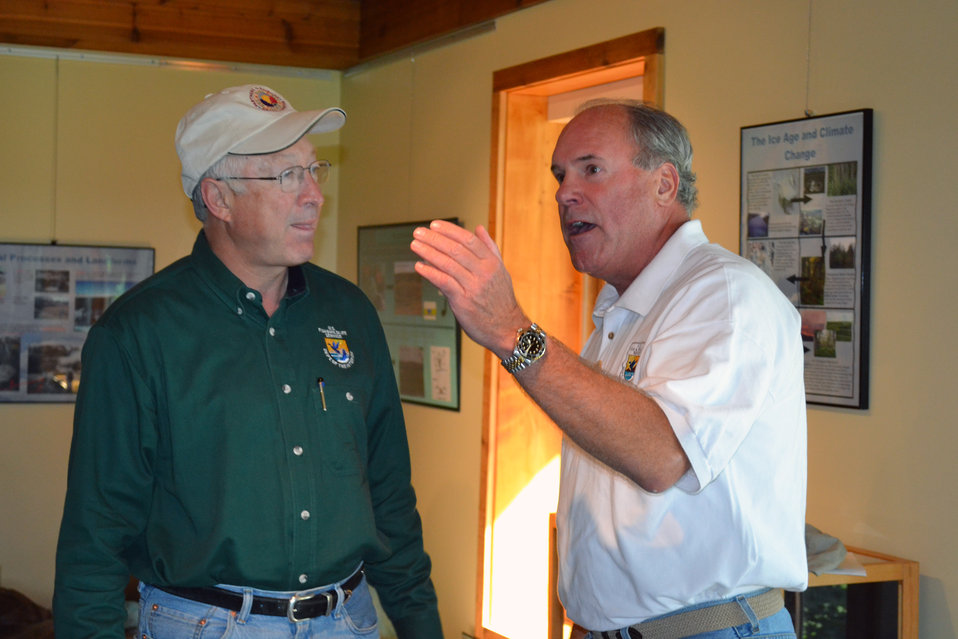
Salazar and Wooley

Secretary of the Interior Ken Salazar and Deputy Director Charlie Wooley.